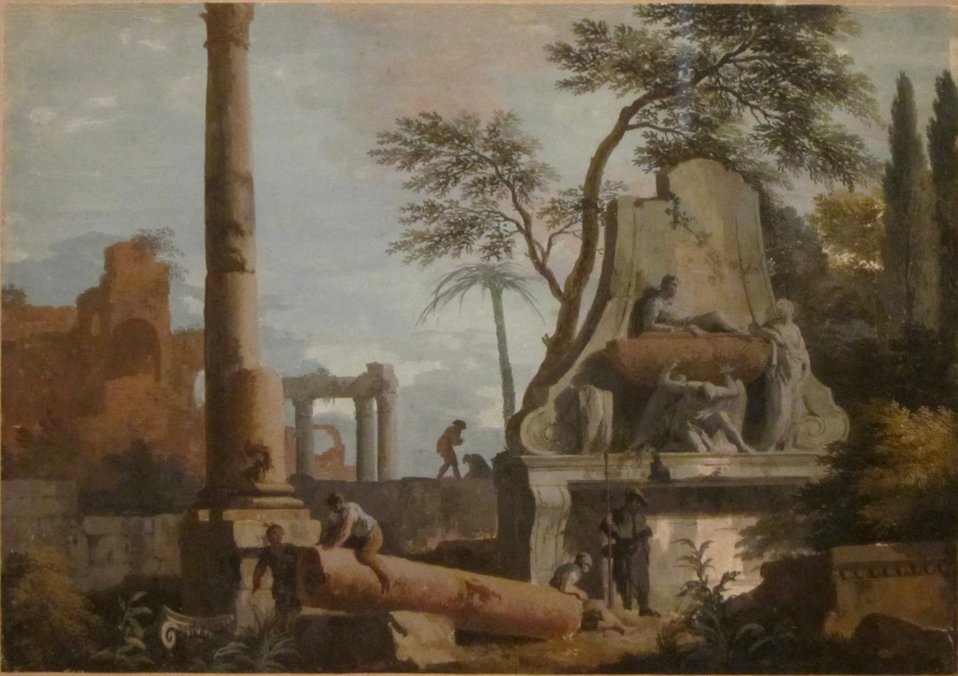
'Fantastic Scene with Ruins' by Marco Ricci, gouache on kidskin, 1728, HMA